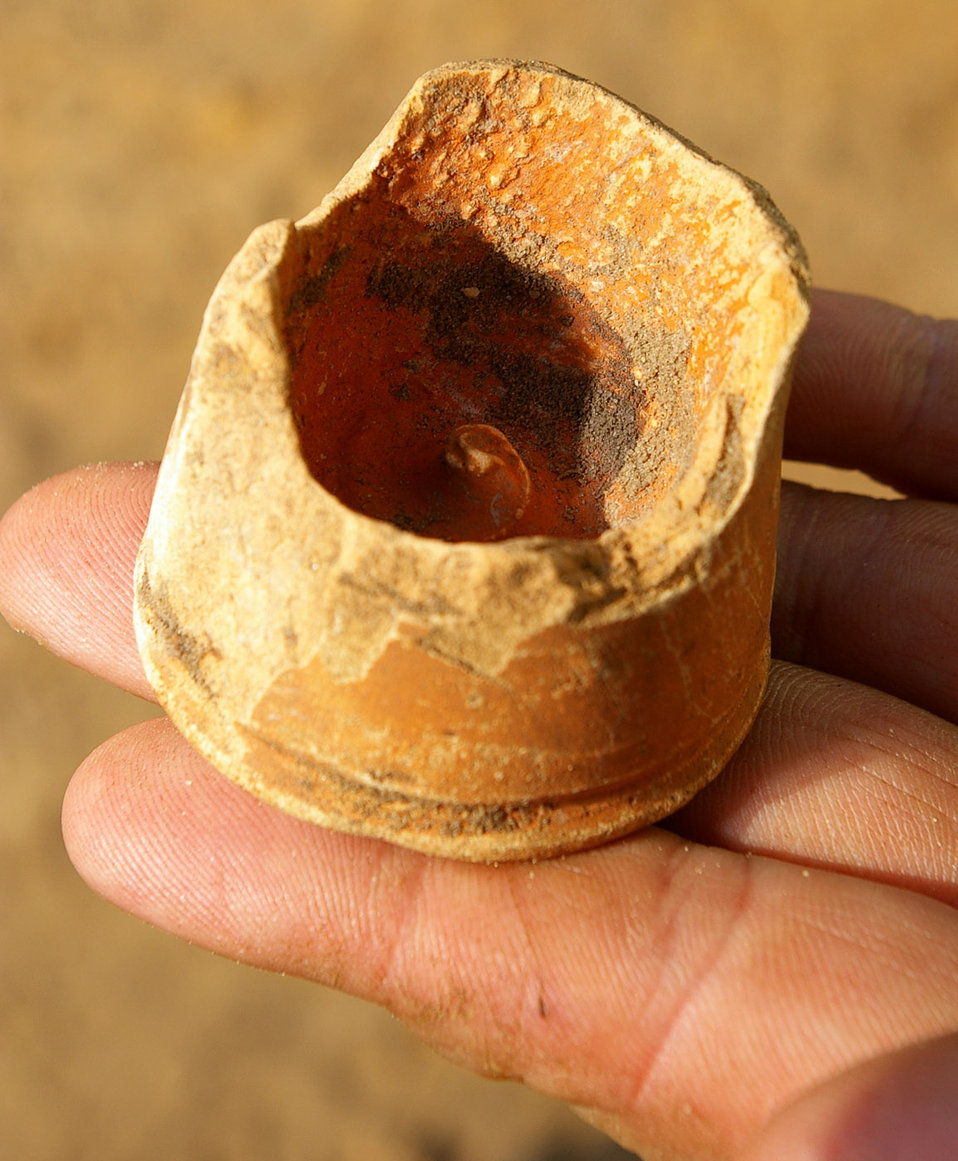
Skeletal remains discovered during dig at Mildenhall

A piece of pottery, thought to be Roman, was found at the Royal Air Force Mildenhall, Englland housing area in Beck Row during an archeological dig by the Suffolk County Council archeological service. A human skeleton was also discovered March 12, and was uncovered March 14. The skeleton has now been removed from the area and will be studied by archeology specialists.